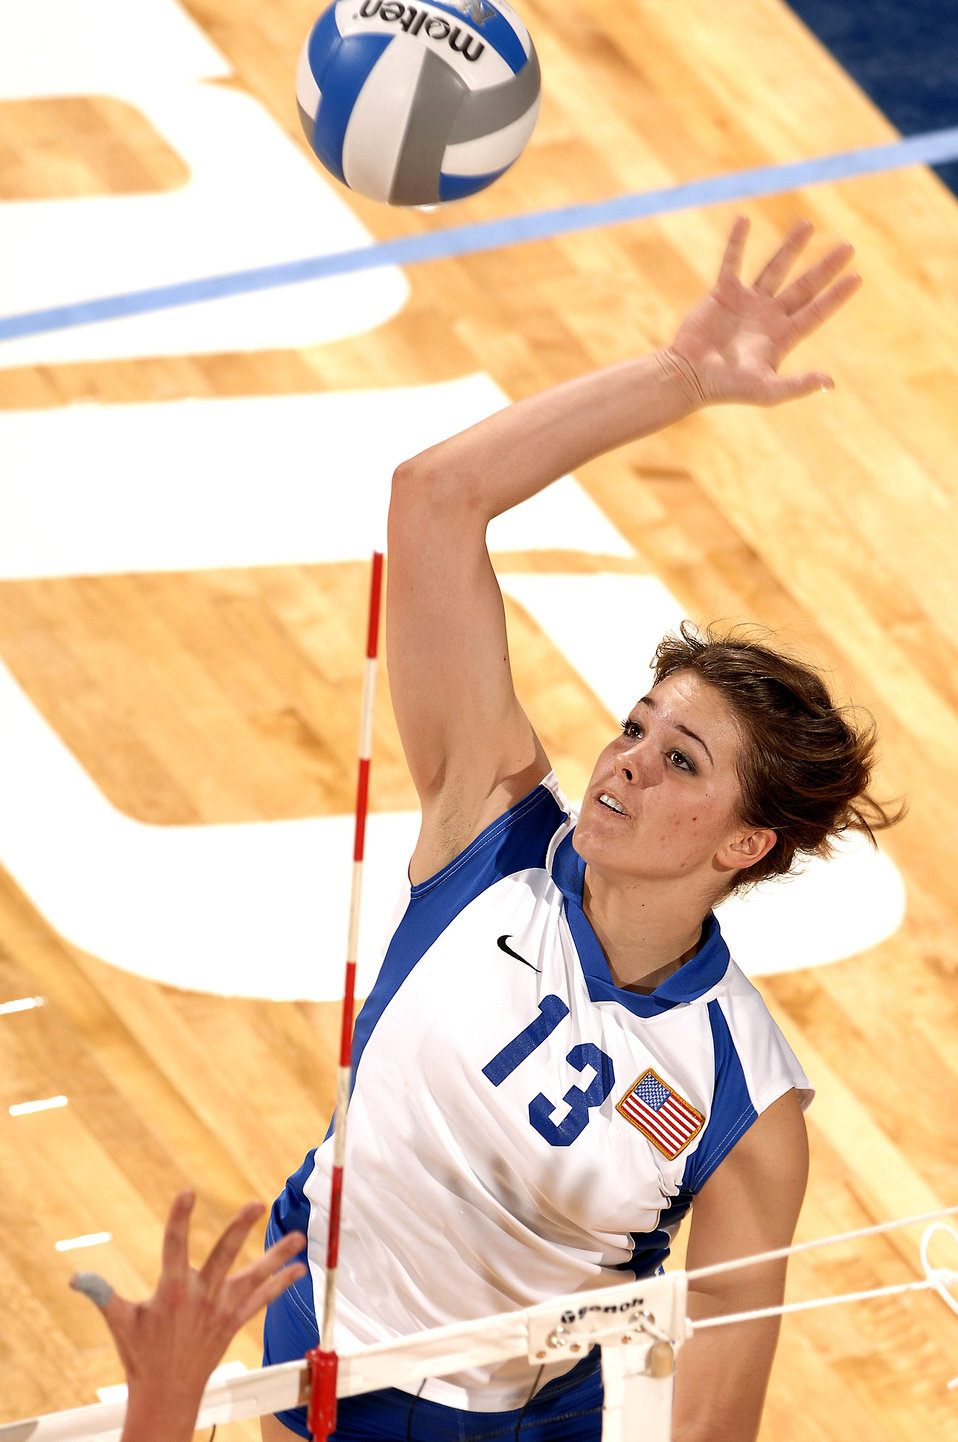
Volleyball: Falcons suffer tough losses

U.S. Air Force Academy freshman Caroline Kurtz goes airborne for the one of her six kills against Brigham Young University as the Air Force volleyball team dropped a three-game decision to the 23rd-ranked Cougars Sept. 29 at the Academy's Clune Arena in Colorado. The Falcons return to the road to take on the San Diego State Aztecs Oct. 4 before heading to face the University of Nevada, Las Vegas Oct. 6.